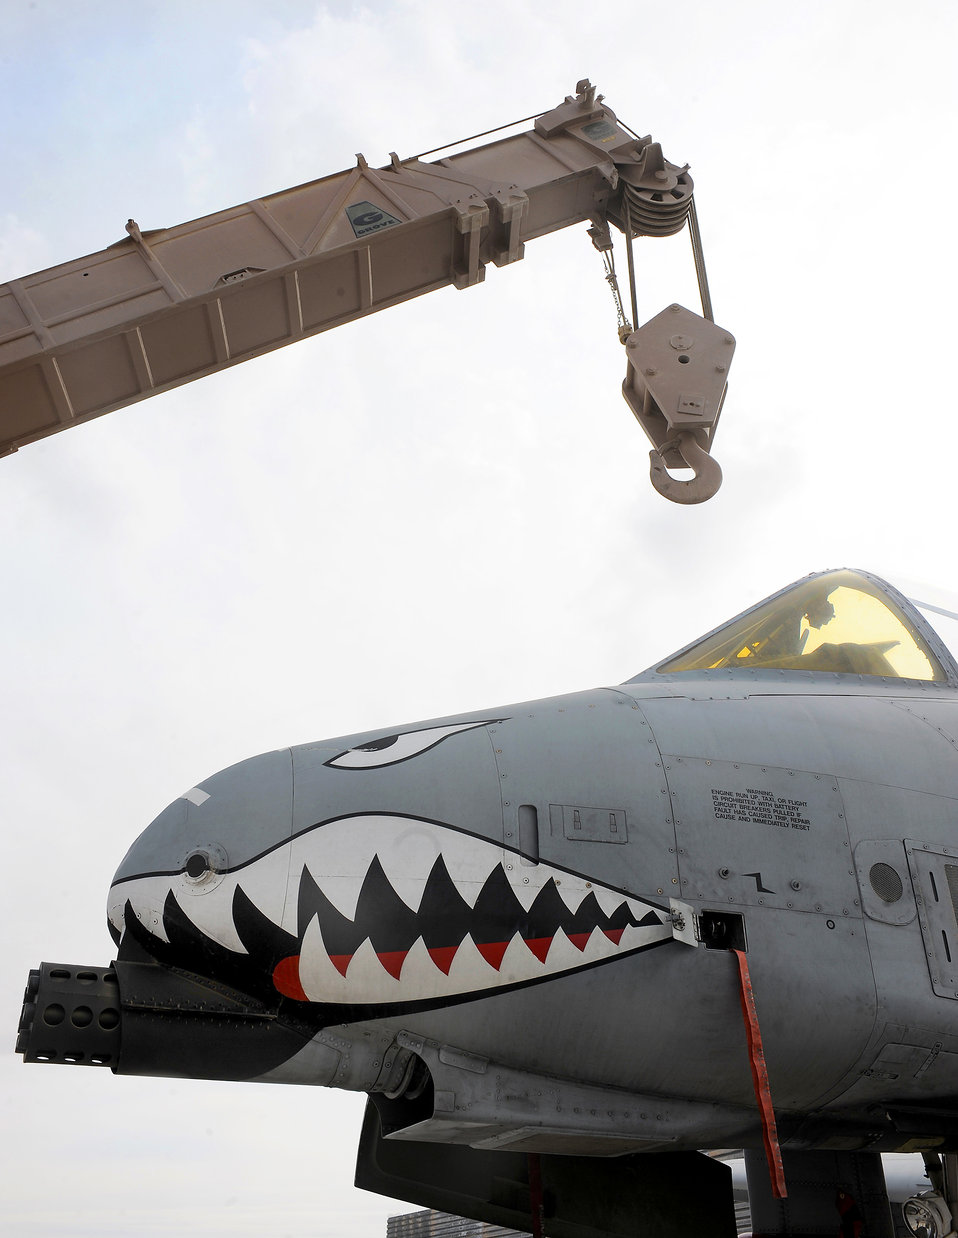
Crash team clears runway

Staff Sgt. Nicholas Blucker positions a 60-ton crane boom to prepare for an A-10C Thunderbolt II lift exercise Feb. 9, 2011, at Kandahar Airfield, Afghanistan. The 451st Air Expeditionary Wing's crash recovery team is responsible for all U.S. aircraft with in-flight emergencies and emergencies on the airfield. Sergeant Blucker is a crash recovery technician assigned to the 451st Expeditionary Maintenance Squadron.